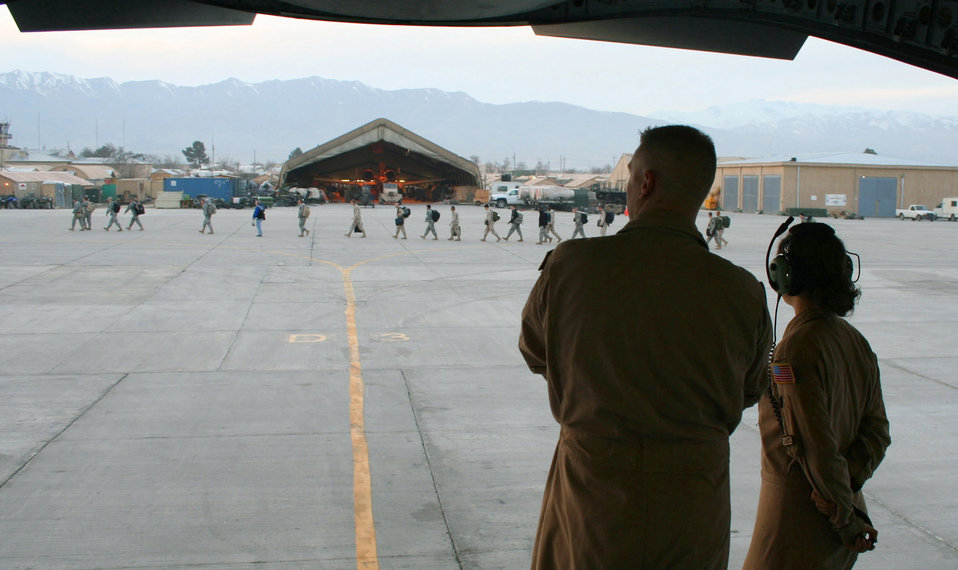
C-17 crews deliver in Central Asia

Airmen 1st Class Jesse Doyle and Suzanne Van Elk, loadmasters, watch Soldiers make their way across the flightline after disembarking the C-17 Globemaster III that completed the final leg of their journey to Bagram Air Base, Afghanistan. Airman Doyle and Airman Van Elk are deployed from McChord Air Force Base, Wash.